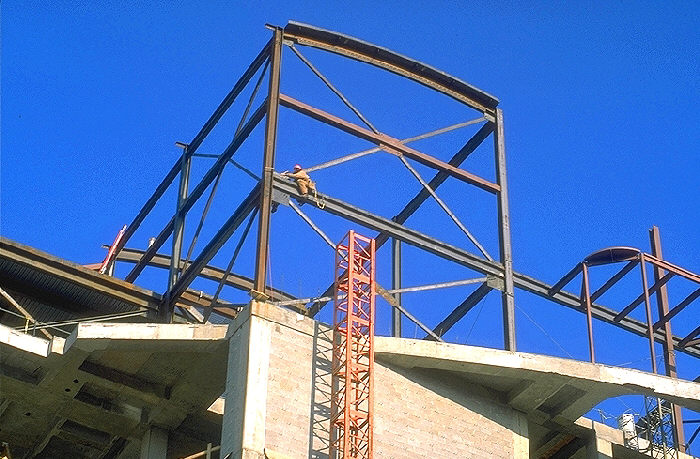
On the Centers for Disease Control's (CDC) Roybal Campus, located in metropolitan Atlanta, Georgia, this March, 1999 image depicts the intermediate phases of construction of Building 17. Note the construction worker safely attached to a life line, while high atop an iron cross-beam.